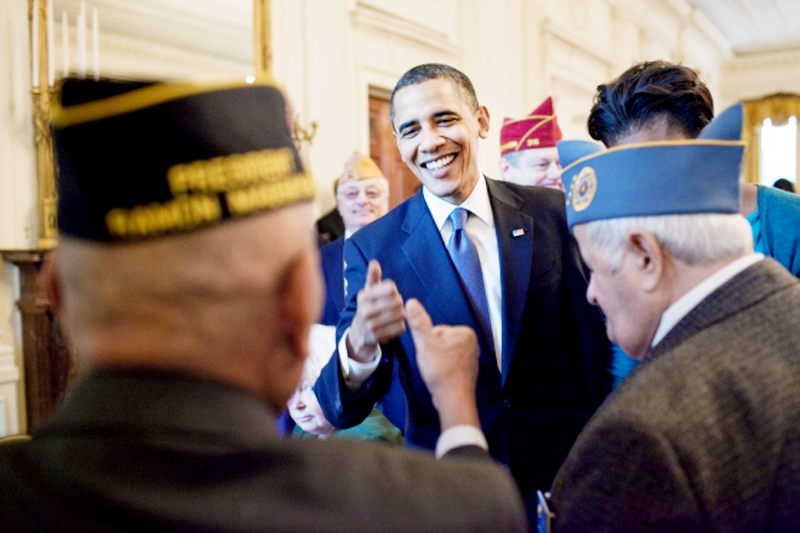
Obama's pledge: America will fulfill obligations to veterans

President Barack Obama shares a 'thumbs-up